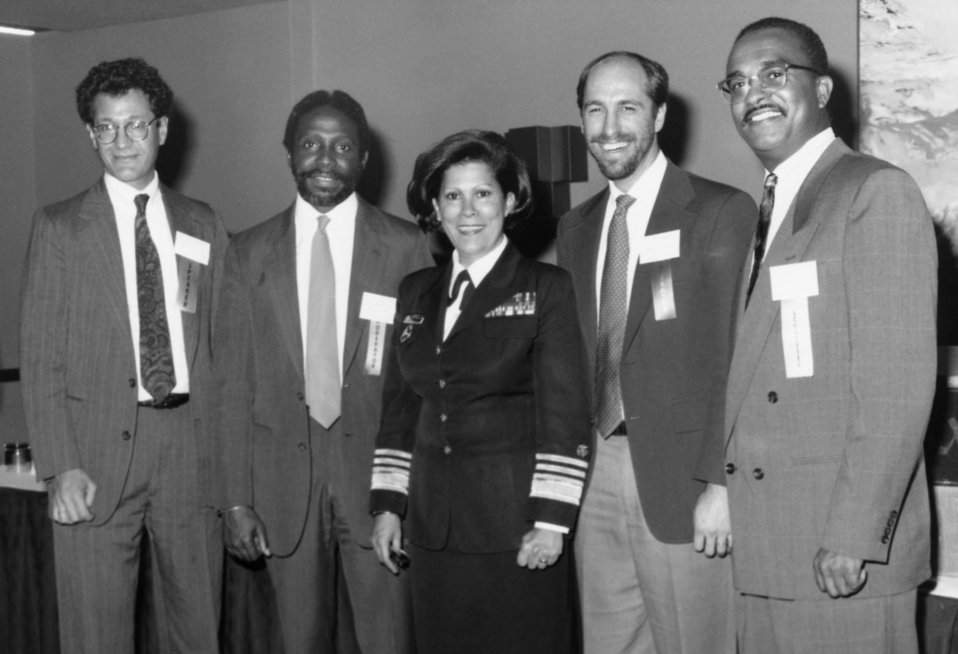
This photograph shows U.S. Surgeon General, Antonia C. Novello (center) while she attended the Centers for Disease Control during the Morehouse University Conference on Minority Violence in December, 1990.